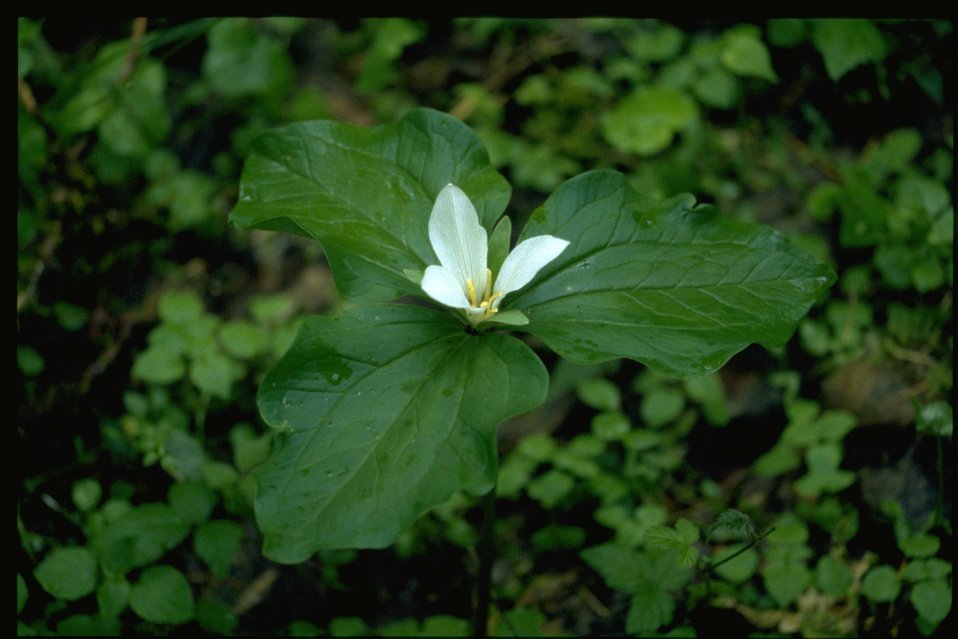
Medium shot of Trillium ovatum.